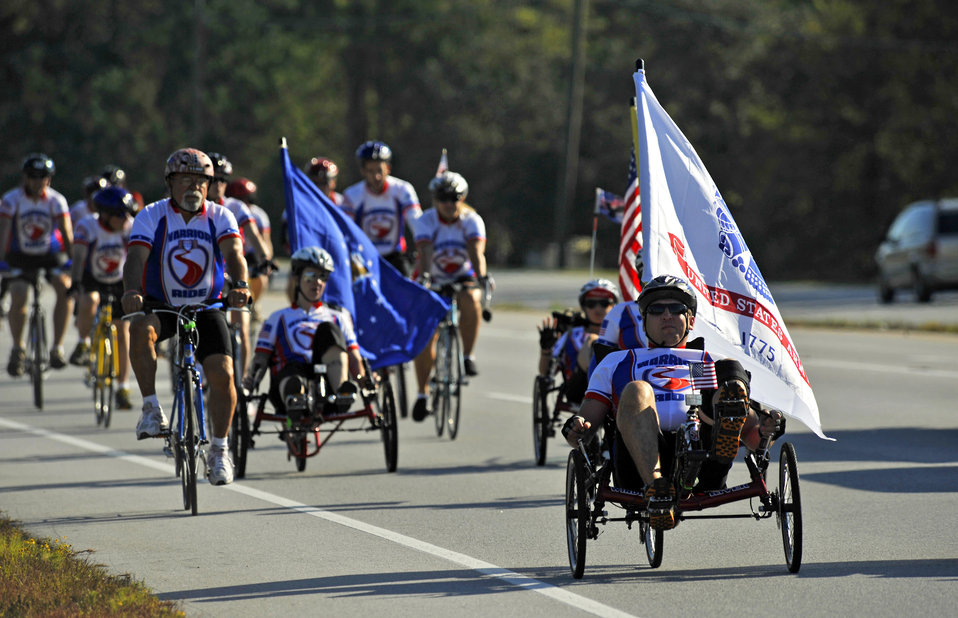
The Warrior Ride

Wounded veterans and volunteers ride through Hampstead, N.C., during The Warrior Ride Oct. 6, 2011. The Warrior Ride garners support for service members returning from overseas and provides recreation and rehabilitation services to wounded warriors.